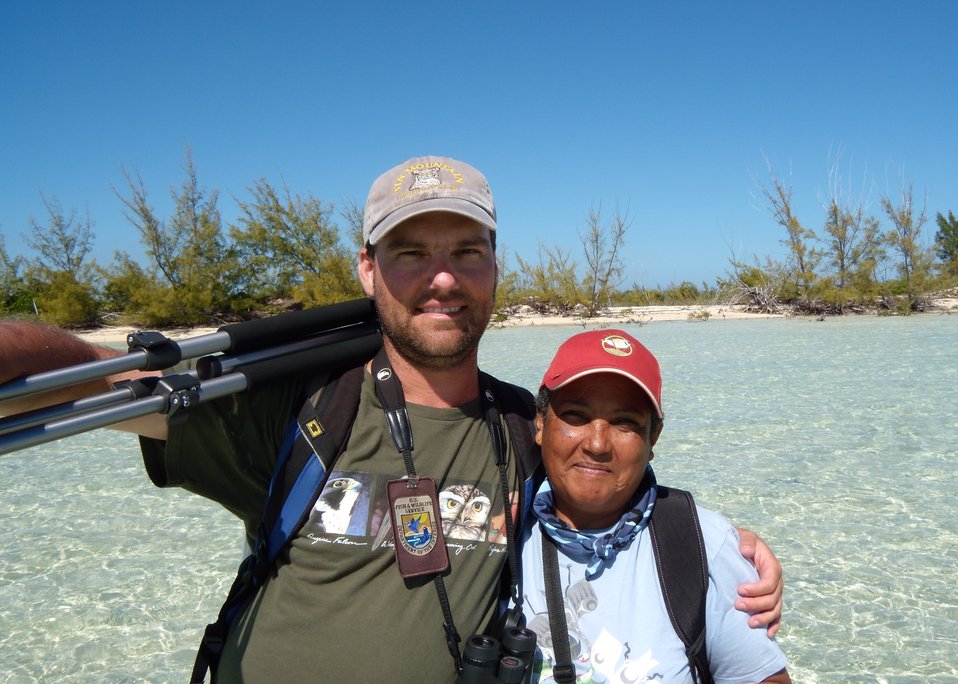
Predensa Moore and Caleb Spiegel

Working on New Providence Island.